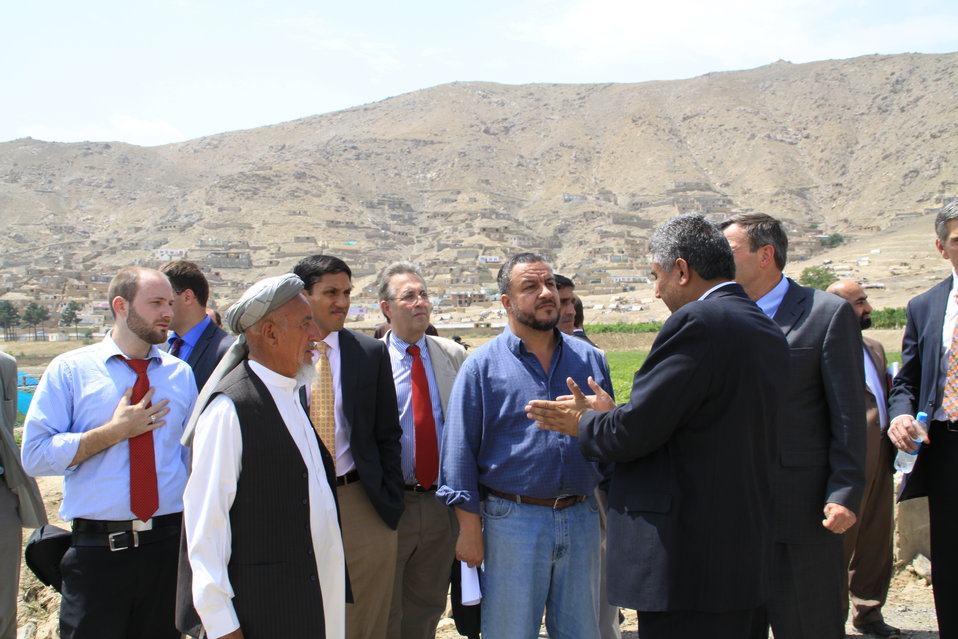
Badam Bagh Farm